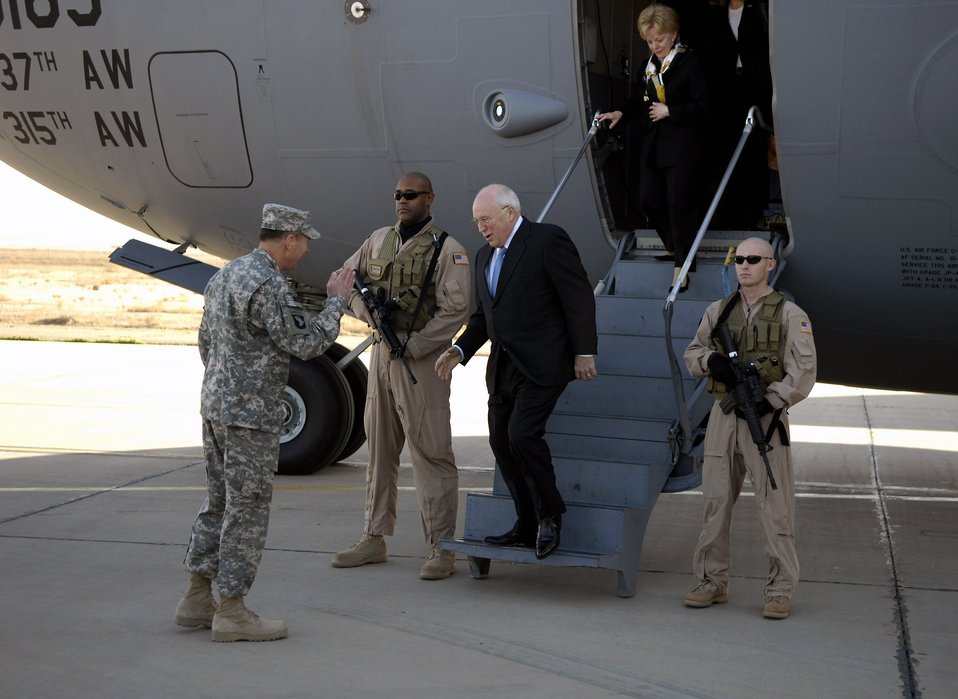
Vice president arrives in Baghdad via Sather

Vice President Dick Cheney is greeted by Army Gen. David Petraeus as he steps off an Air Force C-17 Globemaster III March 17 at Sather Air Base, Iraq. The C-17 is based out of Charleston Air Force Base, S.C. General Petraeus is the commanding general of the Multi-National Force - Iraq.